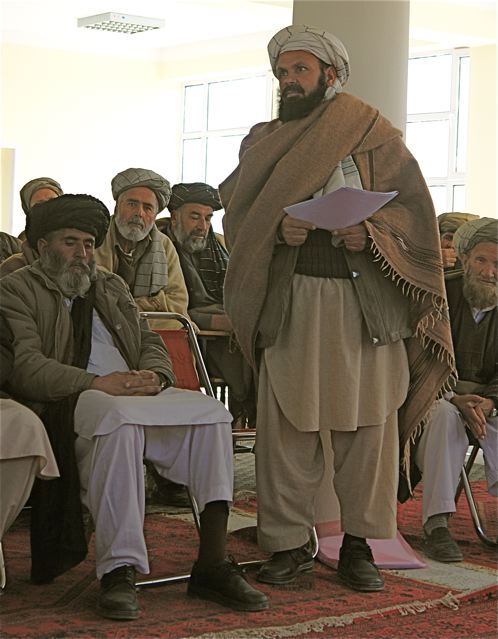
District Council